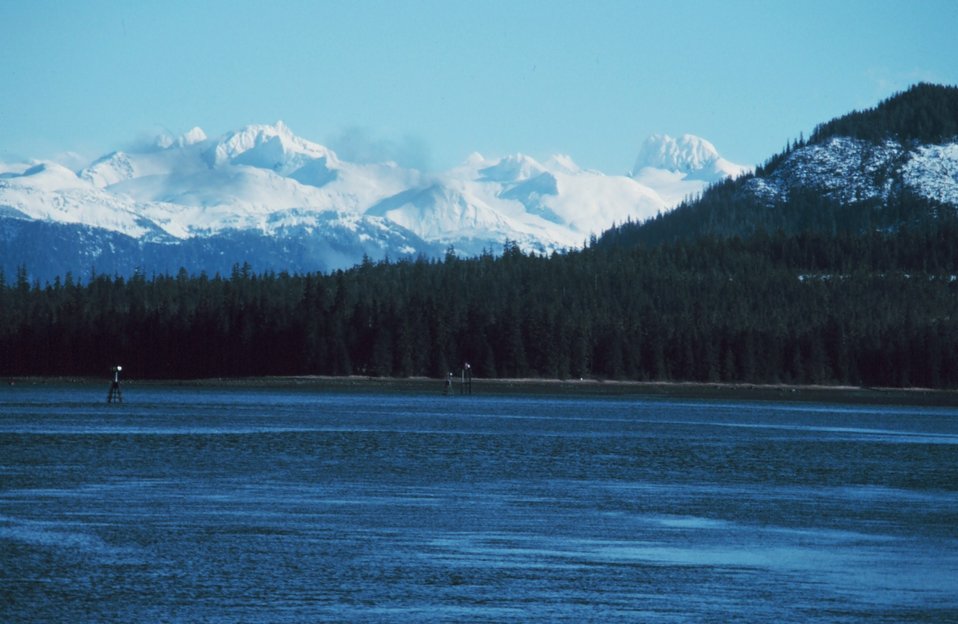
Wrangell Narrows